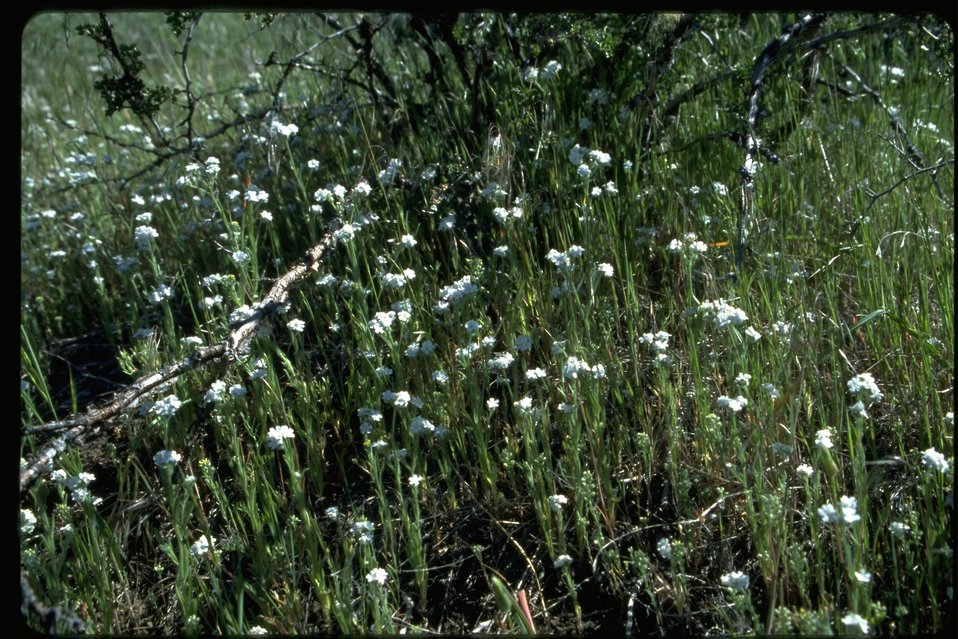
Long shot of Popcorn flower habitat.